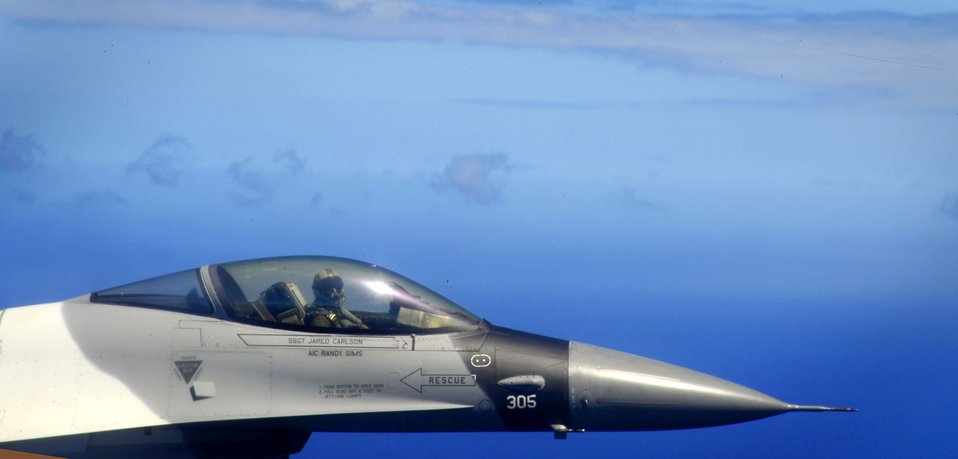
Airmen participate in exercise Cope North

An F-16D Fighting Falcon flies over Guam Feb. 21, 2011, during exercise Cope North.